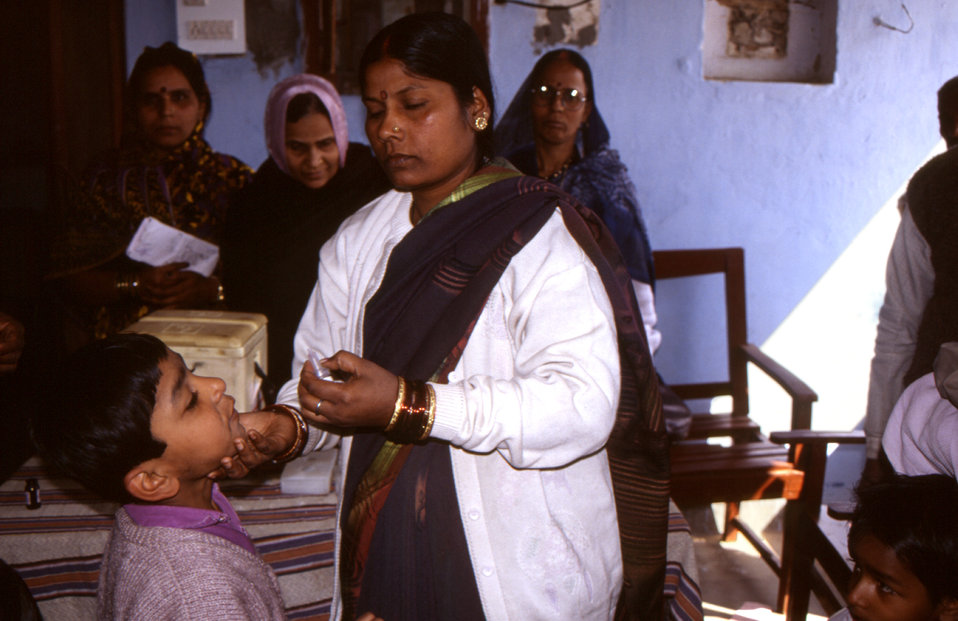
This 2000 image depicted an Indian public health care worker as she was in the process of administering an oral polio vaccine to a young child. After being vaccinated, one of the child's fingers would be marked with an ink marker designating to other health care workers that he'd been vaccinated during the National Immunization Day campaign. The image was provided by Chris Zahniser, B.S.N., R.N., M.P.H., a STOP team member and photographer, who was assigned to the state of Uttar Pradesh in northern India, and spent three months working in the Districts of Gorakhpur and Deoria.